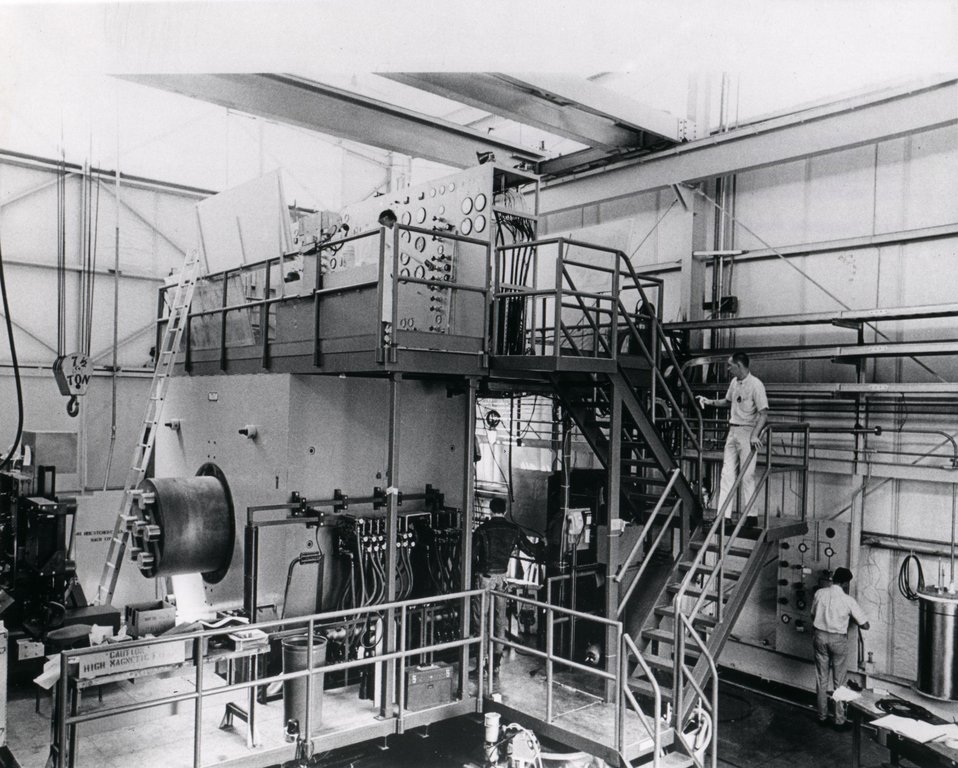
This 40-inch hydrogen bubble chamber went into use at the new Stanford Linear Accelerator during mid-1967. Circa 1968.